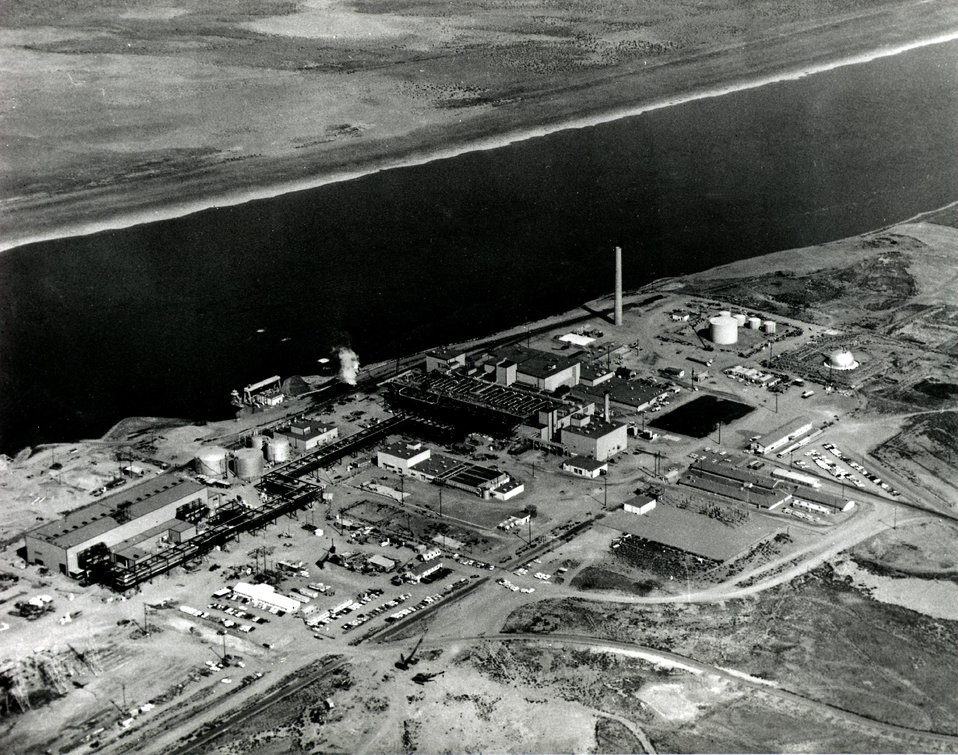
The first and only reactor in the United States used for simultaneous production of electricity and plutonium is located at the AEC's Hanford project near Richland, Washington. The reactor achieved critical December 31, 1963. Circa 1967.